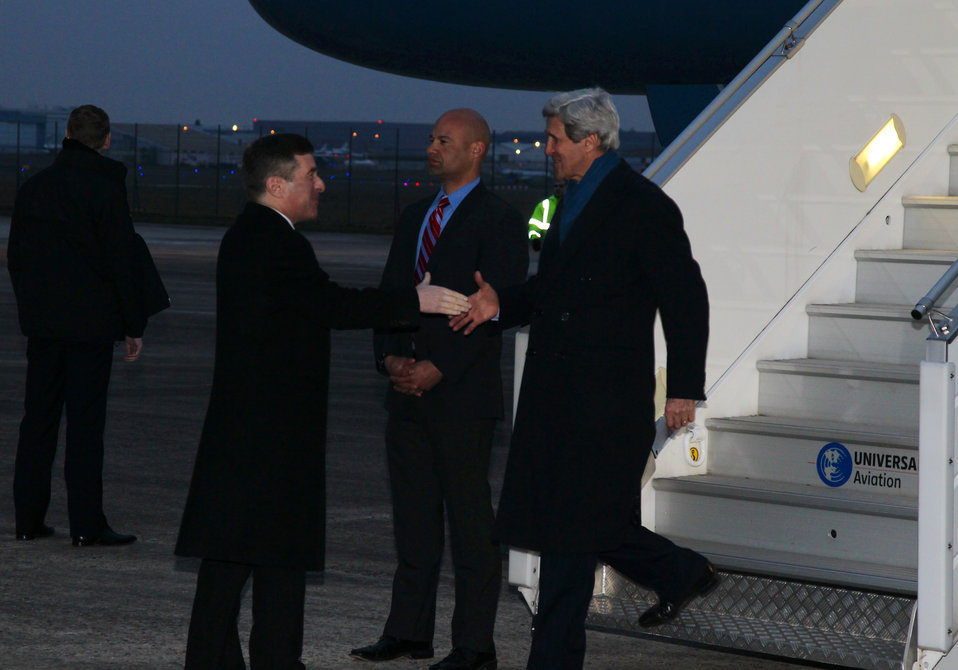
Secretary Kerry Arrives in Paris

U.S. Secretary of State John Kerry is greeted by U.S. Ambassador to France and Monaco Charles Rivkin as he arrives in Paris, France on March 26, 2013.